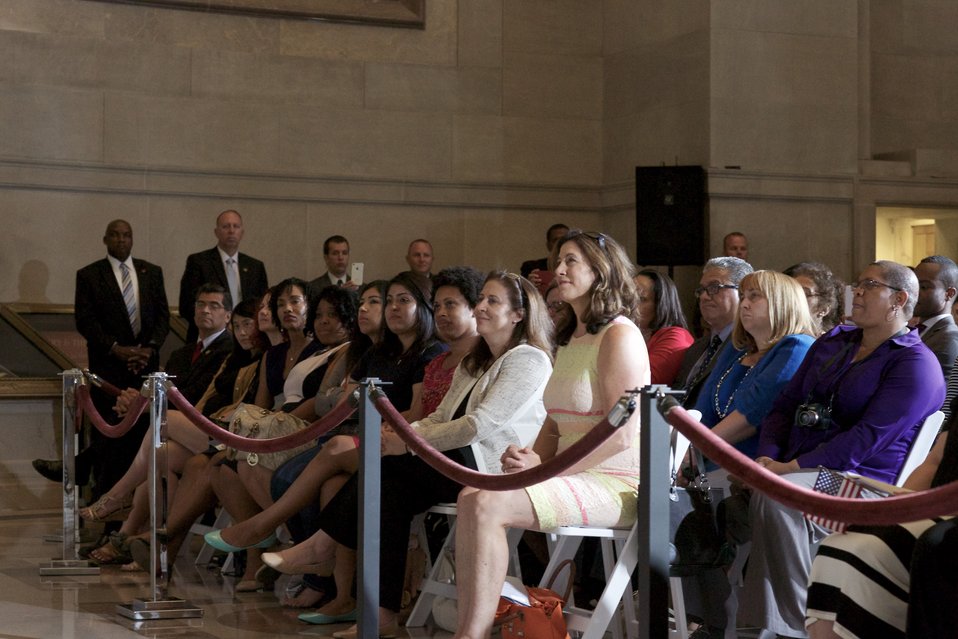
Naturalization Ceremony with Michelle Obama